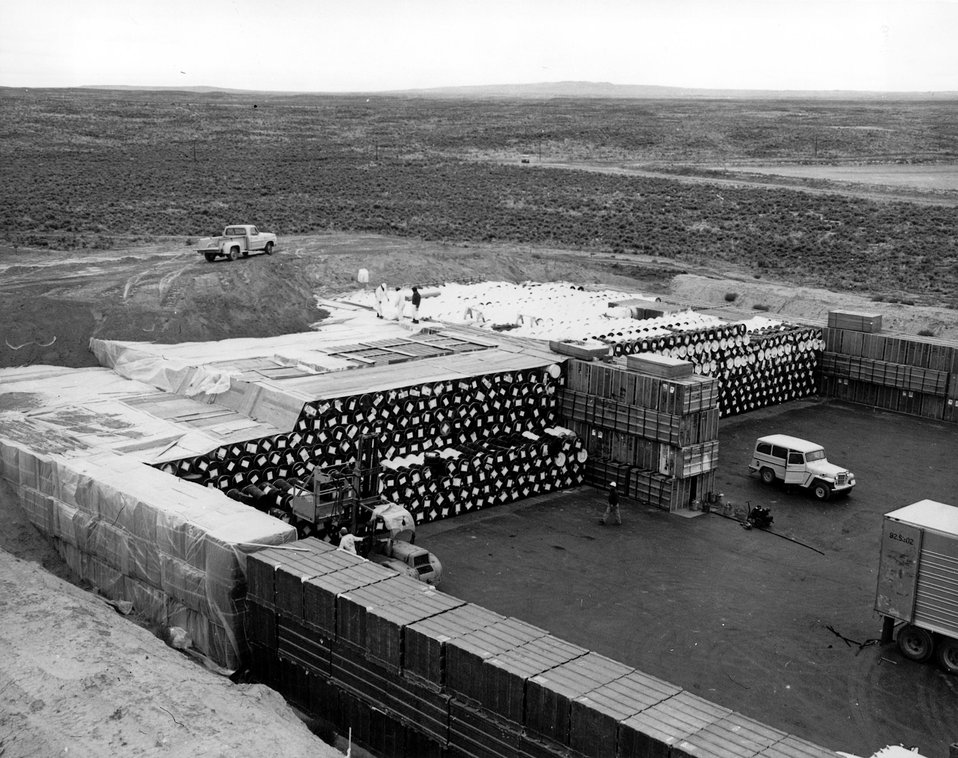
Stacks of 50-gallon drums and fiberglass-covered boxes containing wastes contaminated with radioactive transuranic materials (mostly low-level, long-lived plutonium) are stacked on an asphalt pad in the waste storage area at the National Reactor Testing Station, Idaho. Circa 1977.